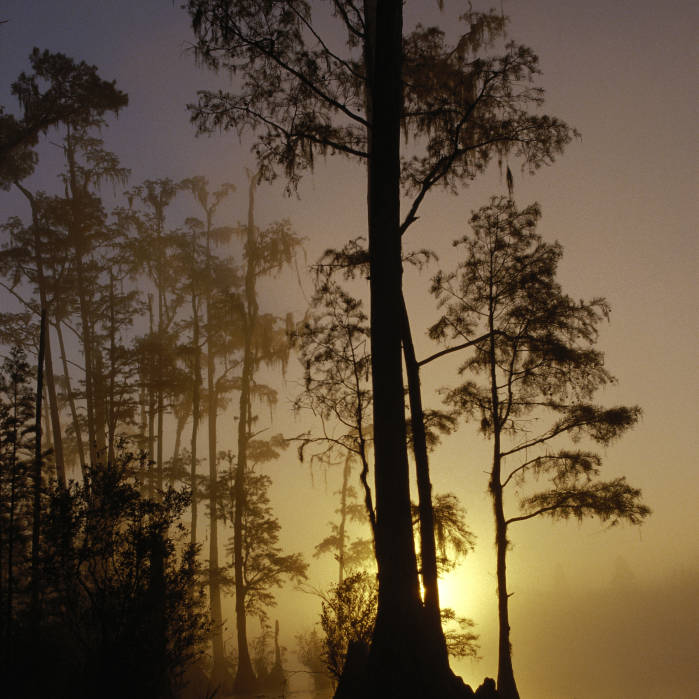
cypress swamp in the mist

Okefenokee National Wildlife Refuge, GA